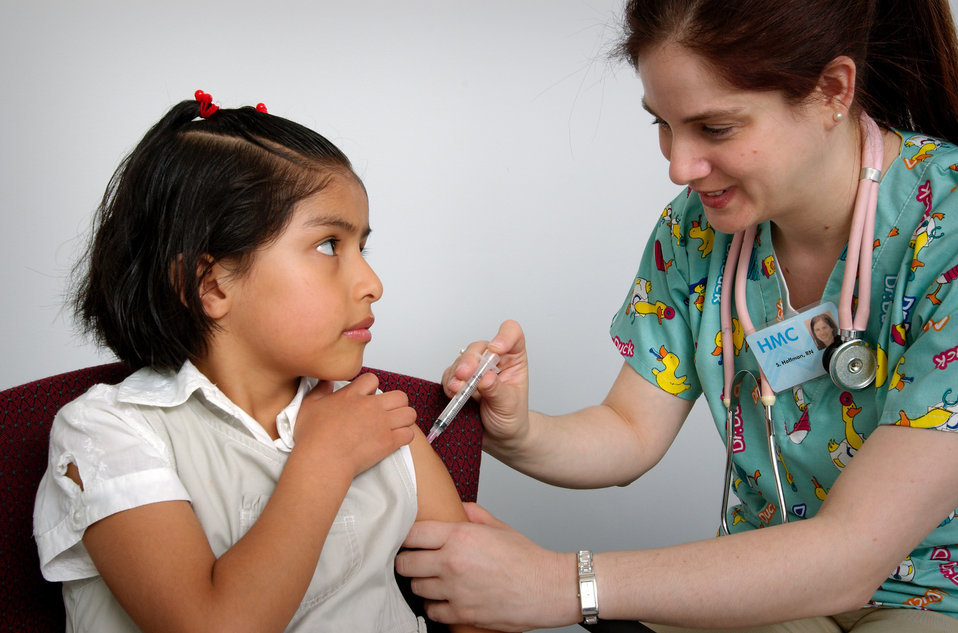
The nurse depicted in this 2006 image was administering an intramuscular vaccination in the left shoulder muscle to a young girl. The nurse immobilized the girl's arm by clutching it tightly, while the girl held up her sleeve in order to facilitate the procedure.Why are childhood vaccines so important?